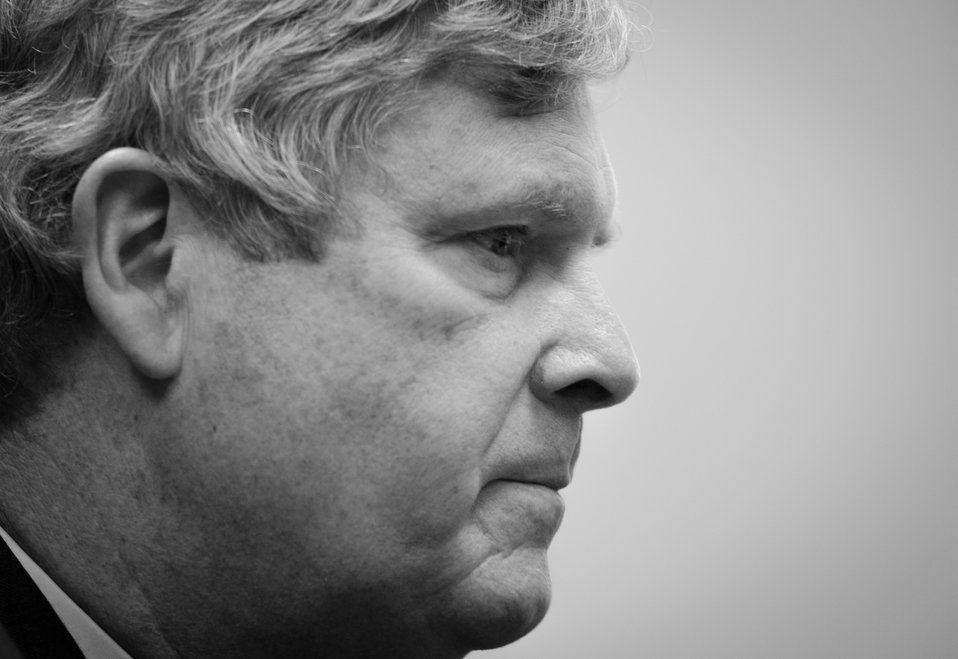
Agriculture Secretary Tom Vilsack listens to a question from a farm broadcaster at the U.S. Department of Agriculture (USDA) on Tuesday, May 14, 2013, in Washington, D.C.